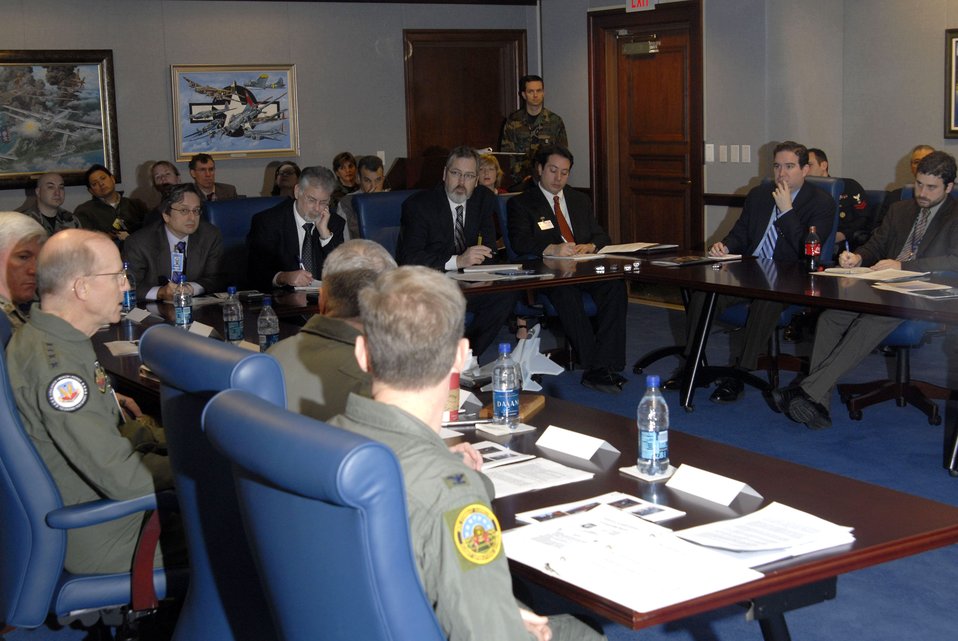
Air Force leaders discuss F-15 accident, future

Gen. John D. W. Corley and his staff answer questions during a media round table at the Pentagon Jan. 10. The round table focused on an F-15 Eagle C model in-flight emergency while flying maneuvers above Missouri Nov. 2. General Corley is the commander of Air Combat Command.